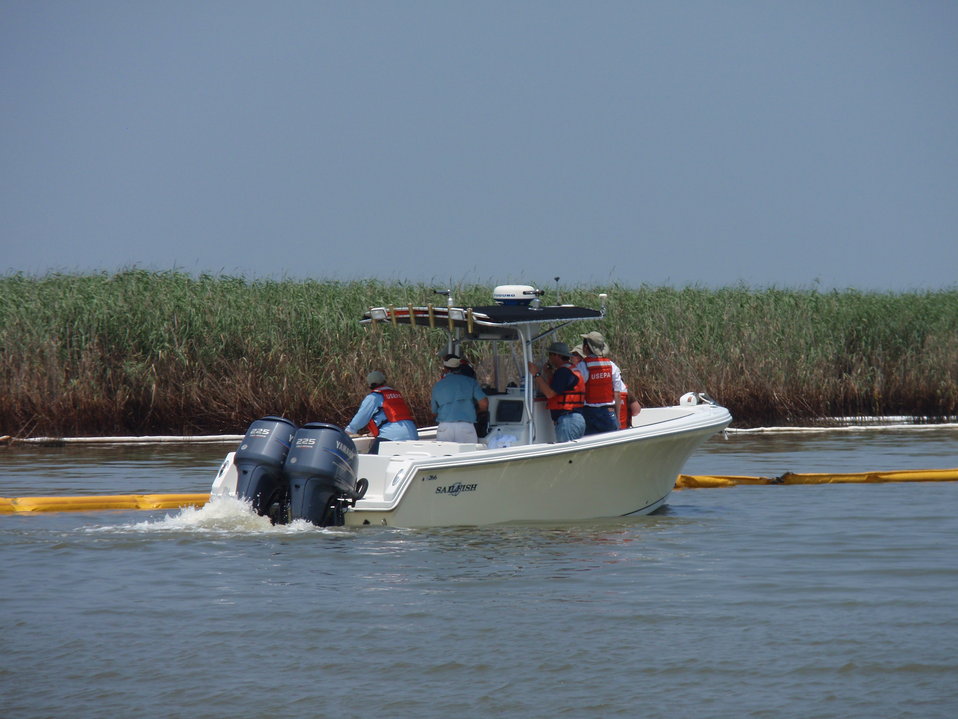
Administrator Jackson gets a first hand look at the efforts to protect the marshes